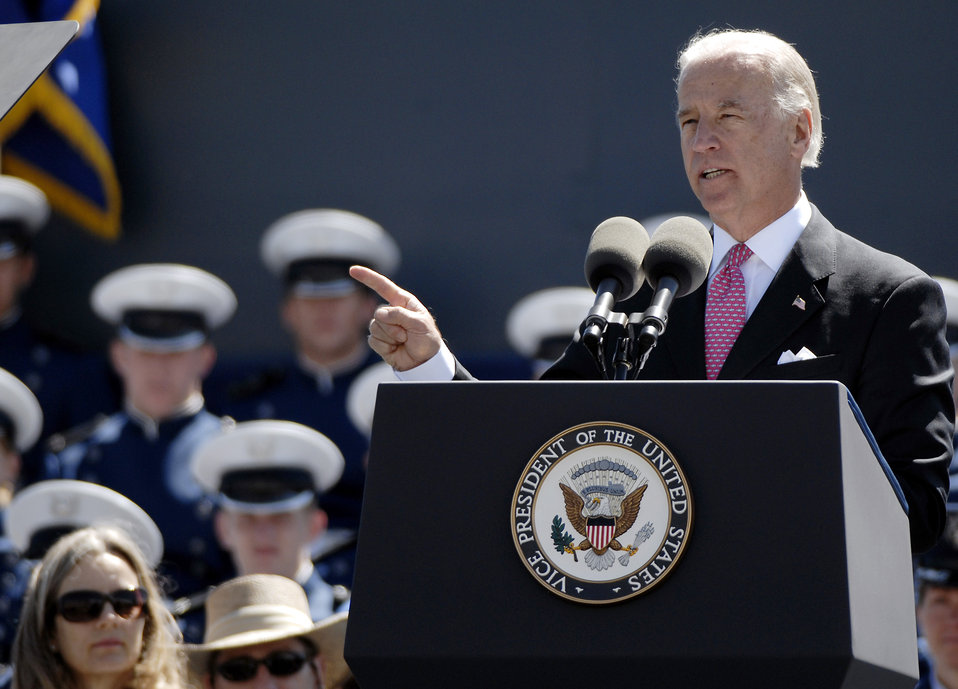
2009 U.S. Air Force Academy graduation

Vice President Joe Biden addresses the 1,046 members of the U.S. Air Force Academy Class of 2009 during commencement ceremonies held May 27 at Falcon Stadium.